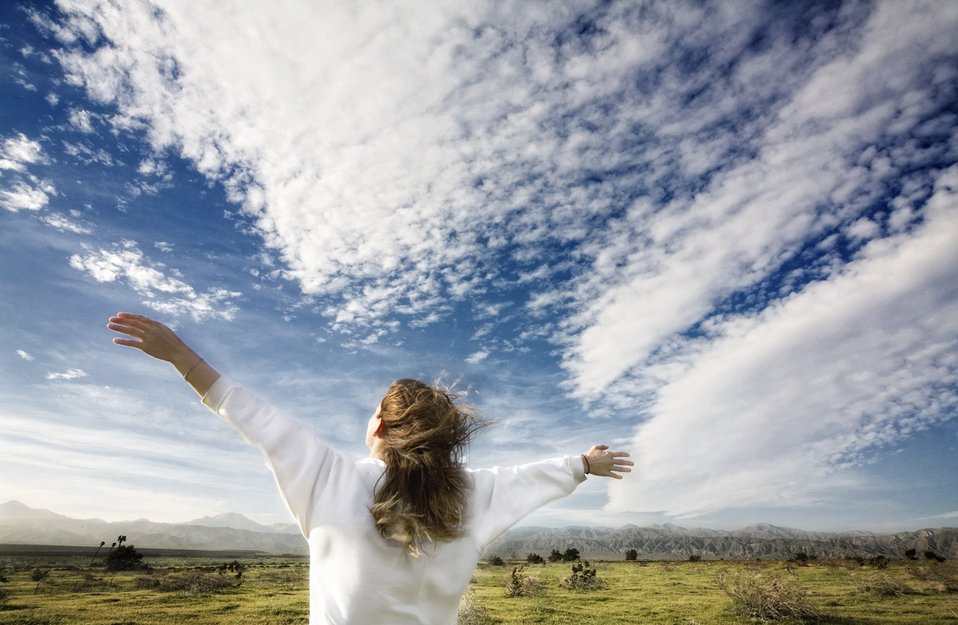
Uploaded by request of Jenna Close

Taken in Whitewater, California

A 50 mph wind was blowing across the high desert. Sand kicked up everywhere, lit by the sun. In a beautiful green field, clouds flew past.